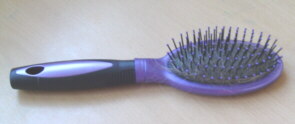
A hairbrush. Español: Cepillo para el pelo